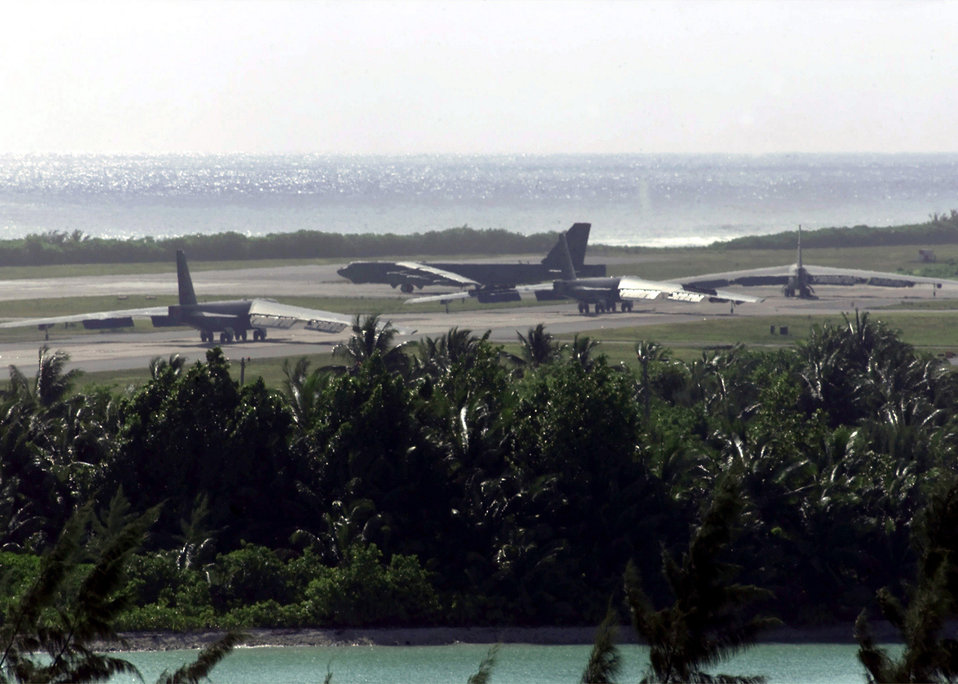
Buffs ready

FILE PHOTO -- Four B-52H Superfortress' prepare to take-off on a mission Oct. 7, 2001, in support of Operation Enduring Freedom.